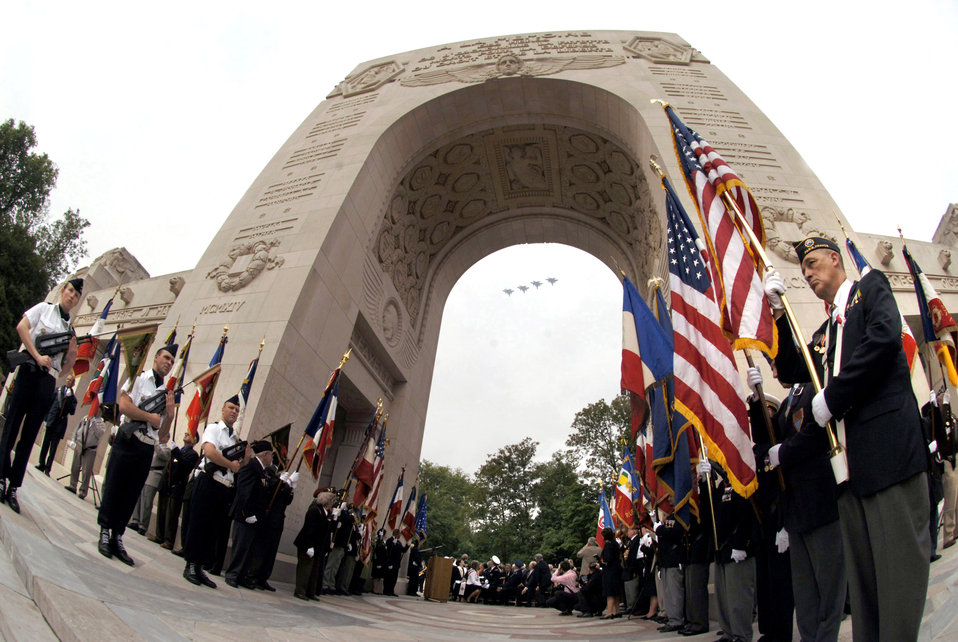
Early aviators commemorated

F-15 Eagles from the 48th Fighter Wing at Royal Air Force Lakenheath, England, fly over a ceremony at the Lafayette Memorial outside Paris where French and Americans gathered to pay homage to the United States' first combat aviators who comprised the Lafayette Escadrille.